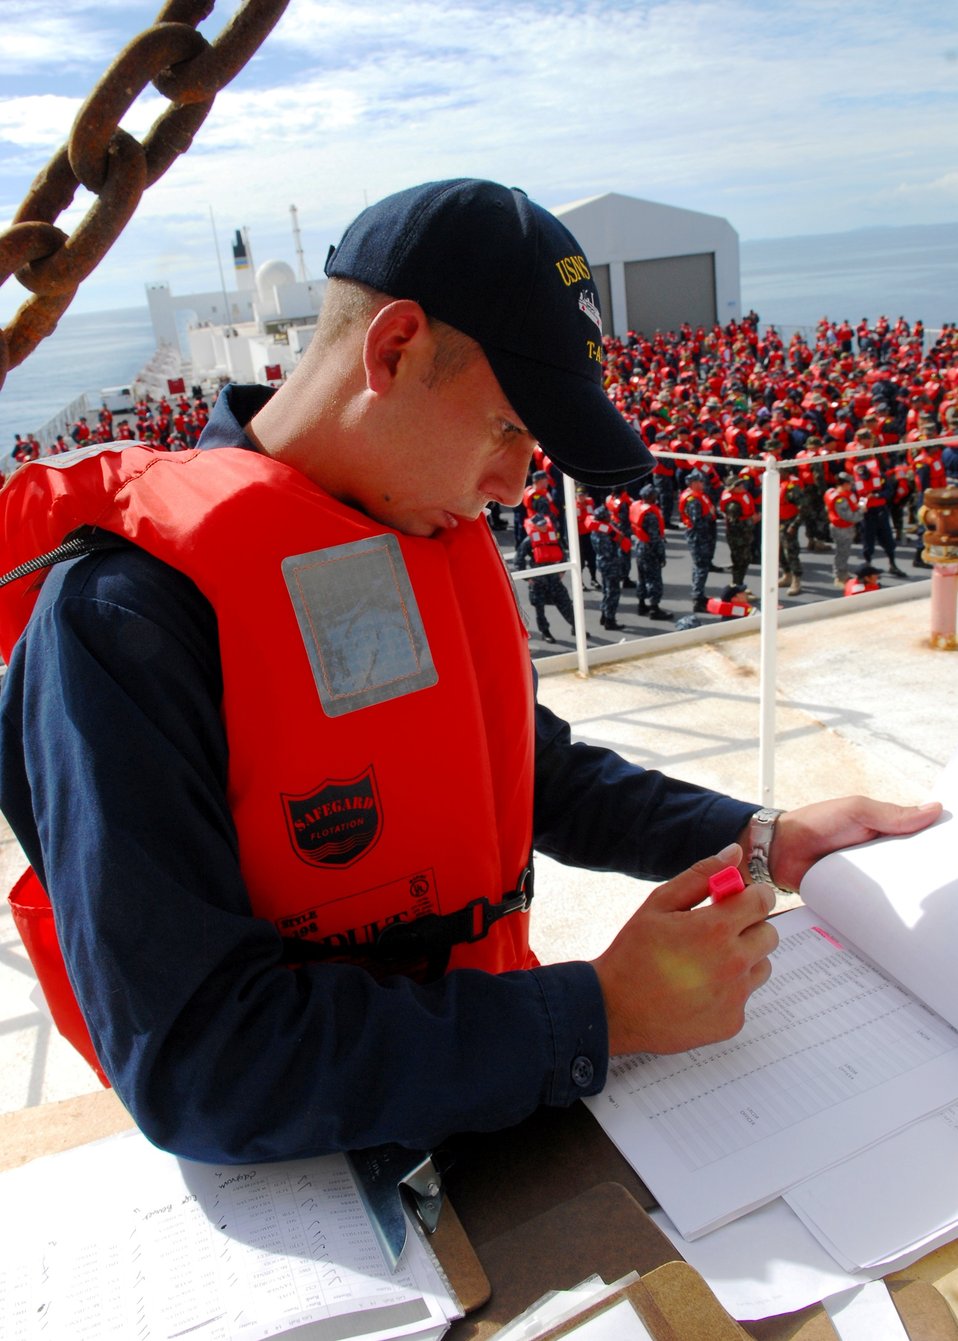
Personnelman Cory Merchant takes muster during an abandon ship drill aboard the Military Sealift Command hospital ship USNS Mercy (T-AH 19) on July 6, 2010, while Mercy transits the South China Sea during Pacific Partnership 2010, the fifth in a series of annual U.S. Pacific Fleet humanitarian and civic assistance endeavors to strengthen regional partnerships.